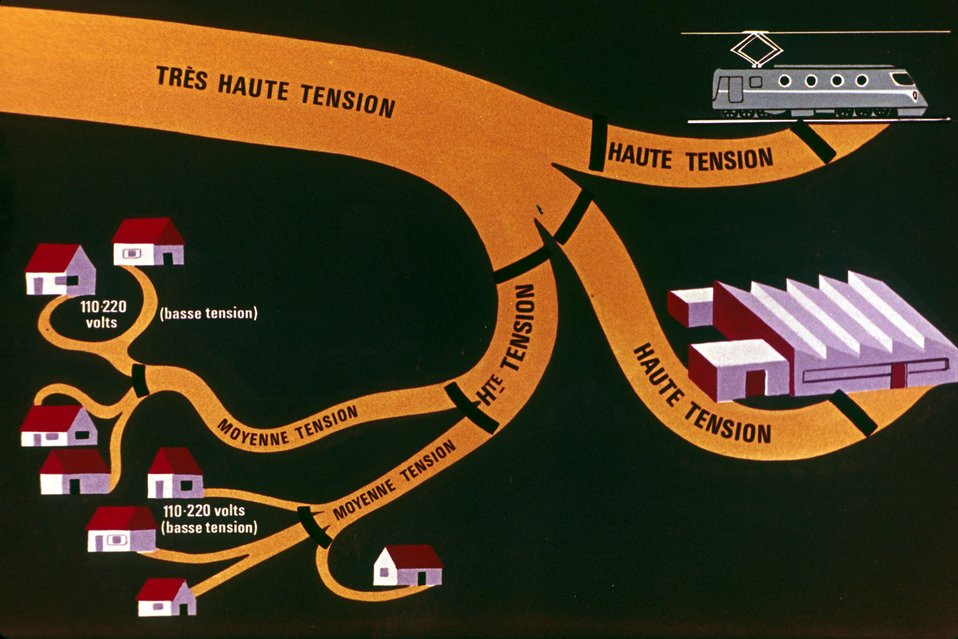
Transport et distribution d'ÐlectricitÐ.